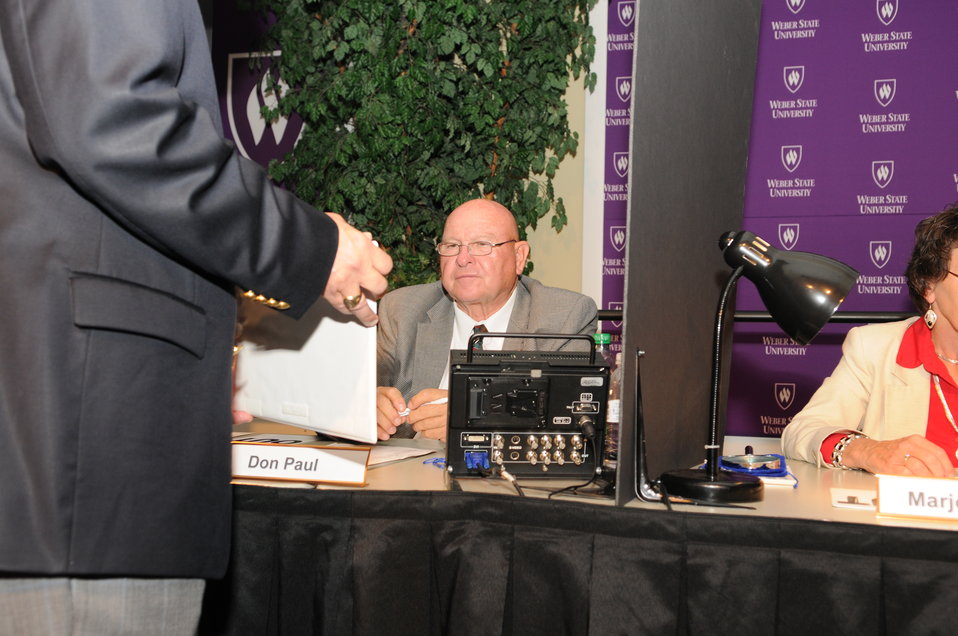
Judging

The U.S. Fish & Wildlife Service sponsored the 2012 Federal Duck Stamp Art Contest September 28 and 29 in Ogden, Utah, at Weber State University. A panel of five judges was responsible for choosing the art work used to design the 2013-2014 Migratory Bird Hunting and Conservation Stamp.